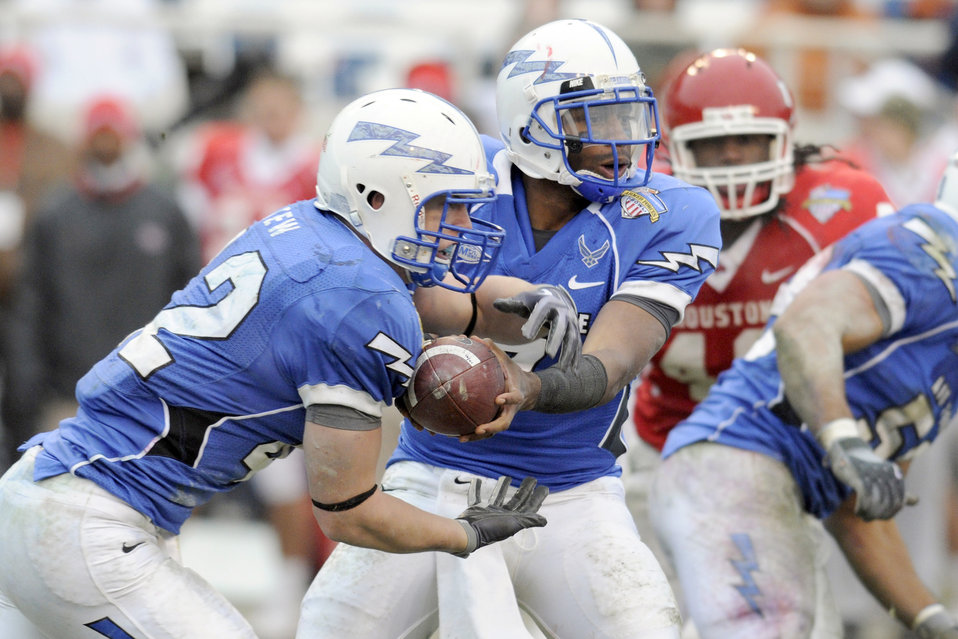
Air Force football team ranked second nationally in APR

Falcons quarterback Tim Jefferson hands the ball to fullback Jared Tew during the 2009 Bell Helicopter Armed Forces Bowl. Air Force defeated the University of Houston 47-20 on Dec. 31. The U.S. Air Force Academy football team here has the second-highest multi-year Academic Progress Rate of any team in the Football Bowl Subdivision. The Falcons will launch back into action for the 2010 season Sept. 4, 2010 against Northwestern State.